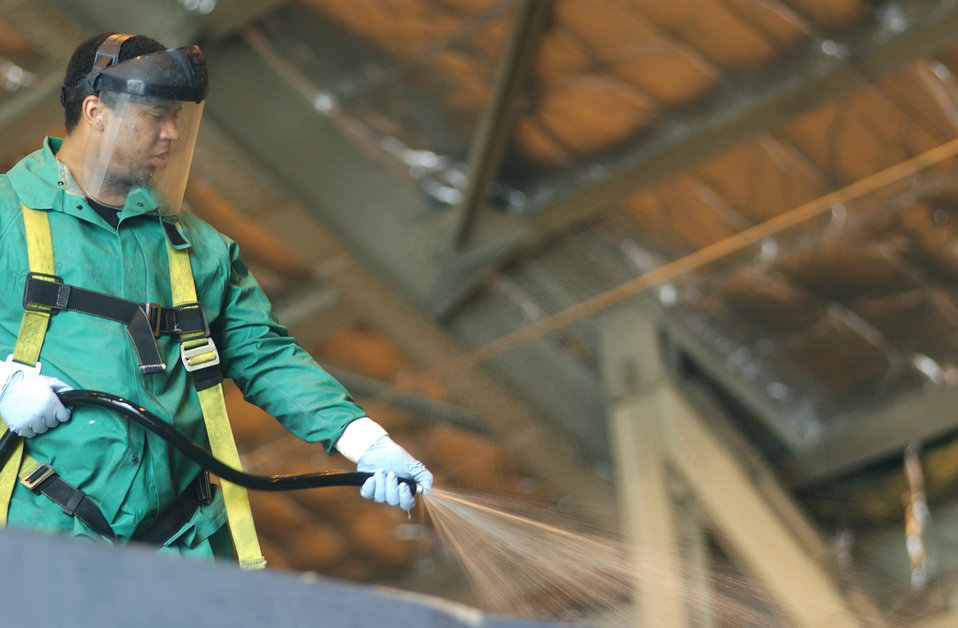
It's a wash

ELMENDORF AIR FORCE BASE, Alaska -- Senior Airman Lance Claverie washes an F-15 Eagle from the 19th Fighter Squadron here during Northern Edge '04. About 9,000 Soldiers, Sailors, Airmen, Marines and Coast Guardsmen are serving as part of a joint task force practicing tasks associated with joint operations.